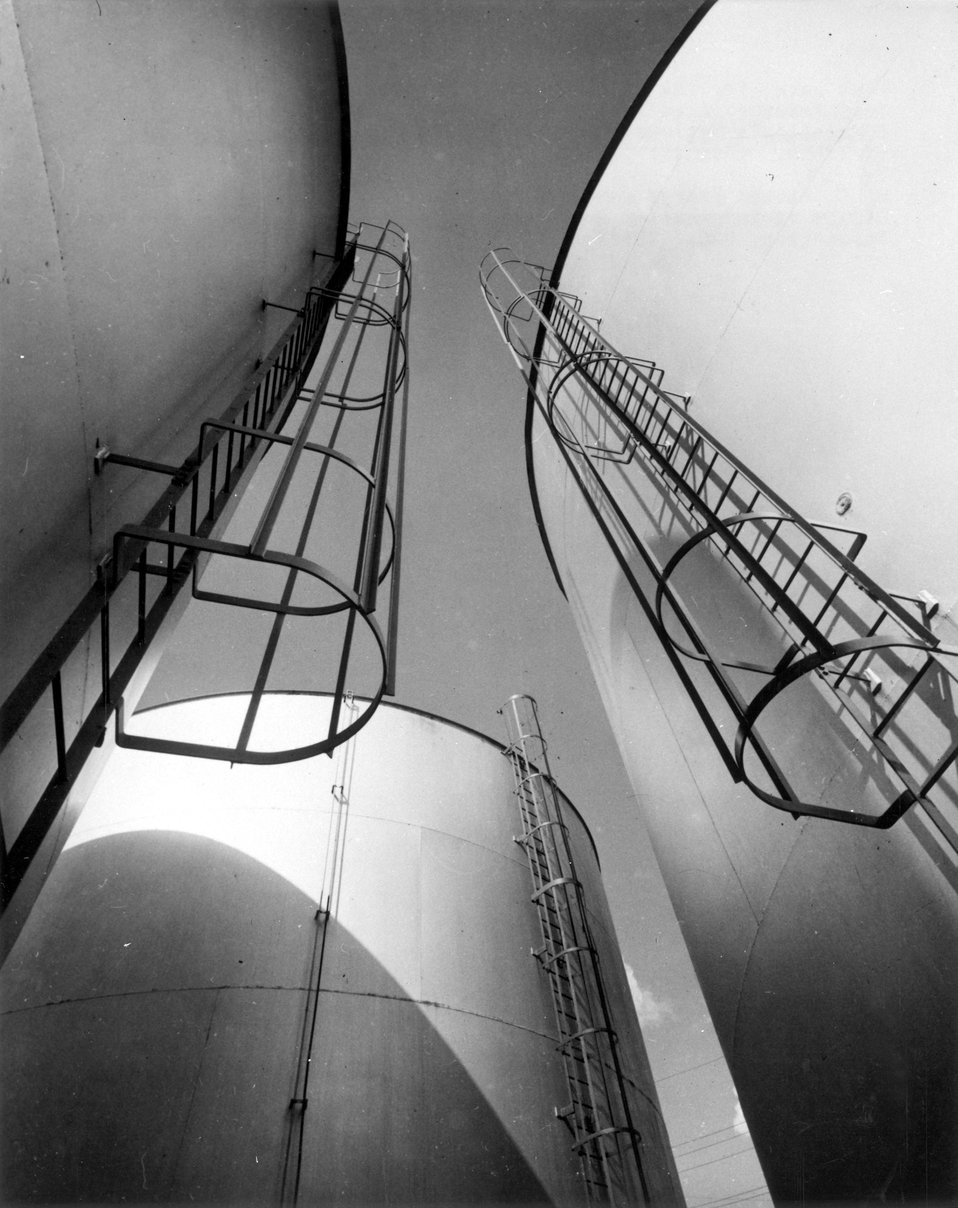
Tank Farm (for raw water storage) in the Test Reactor Area at the U.S. Atomic Energy Commission's National Reactor Testing Station in Idaho. Circa 1974.